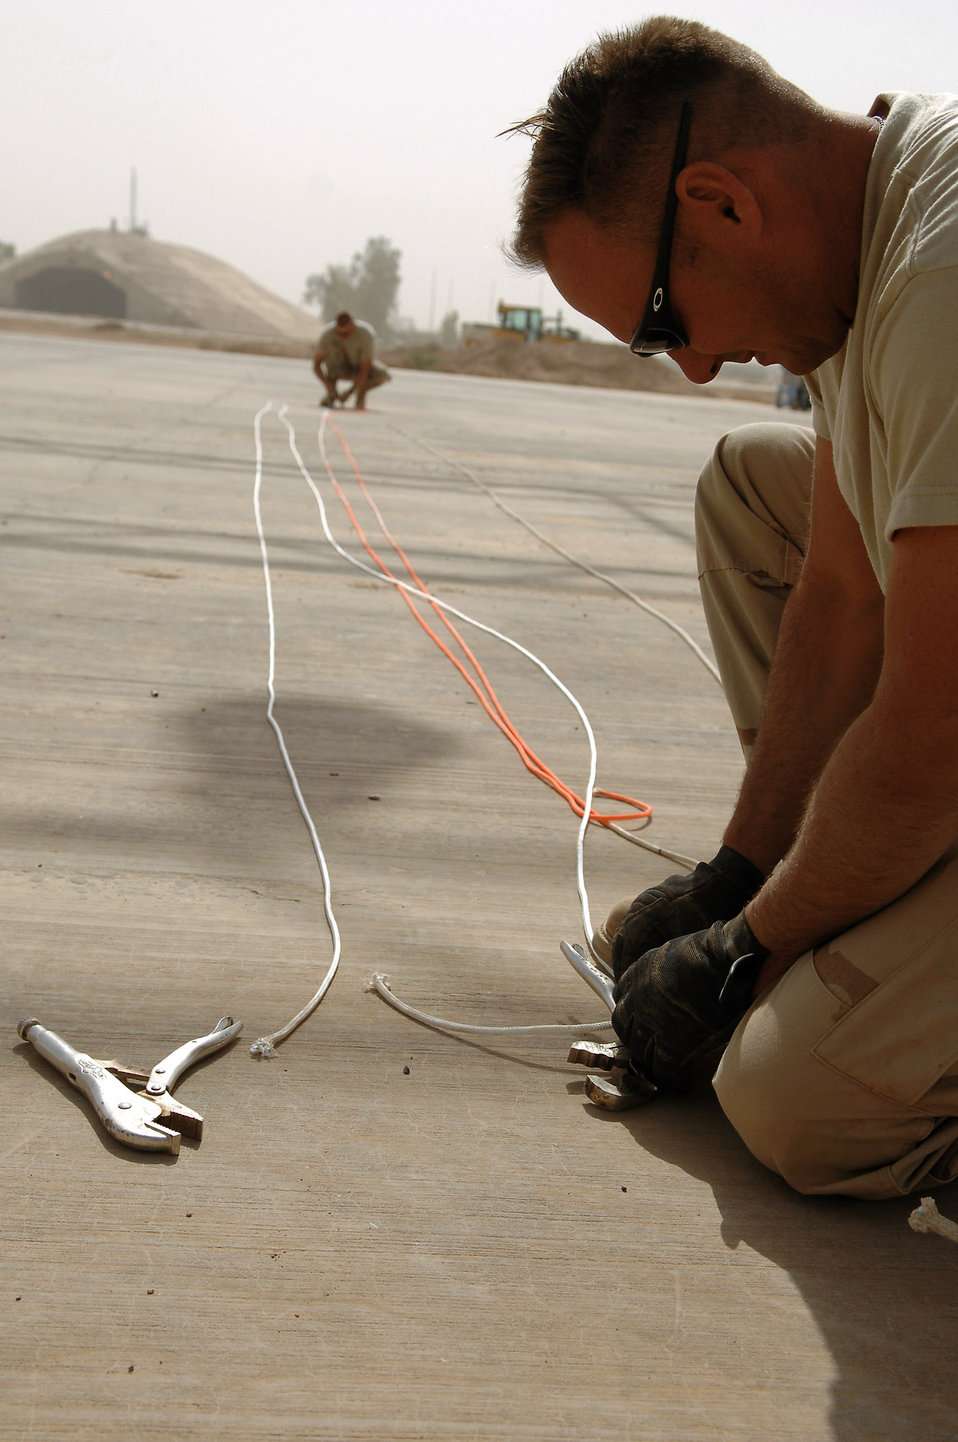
Under the big top

Tech. Sgt. Scott Greenwalt ties chase ropes to clamps May 7 at Balad Air Base, Iraq. The ropes are clamped onto the canopy while being raised to prevent the wind from damaging it. Sergeant Greeenwalt is a 332nd Expeditionary Civil Engineer Squadron structural engineer deployed from Ellsworth Air Force Base, S.D.